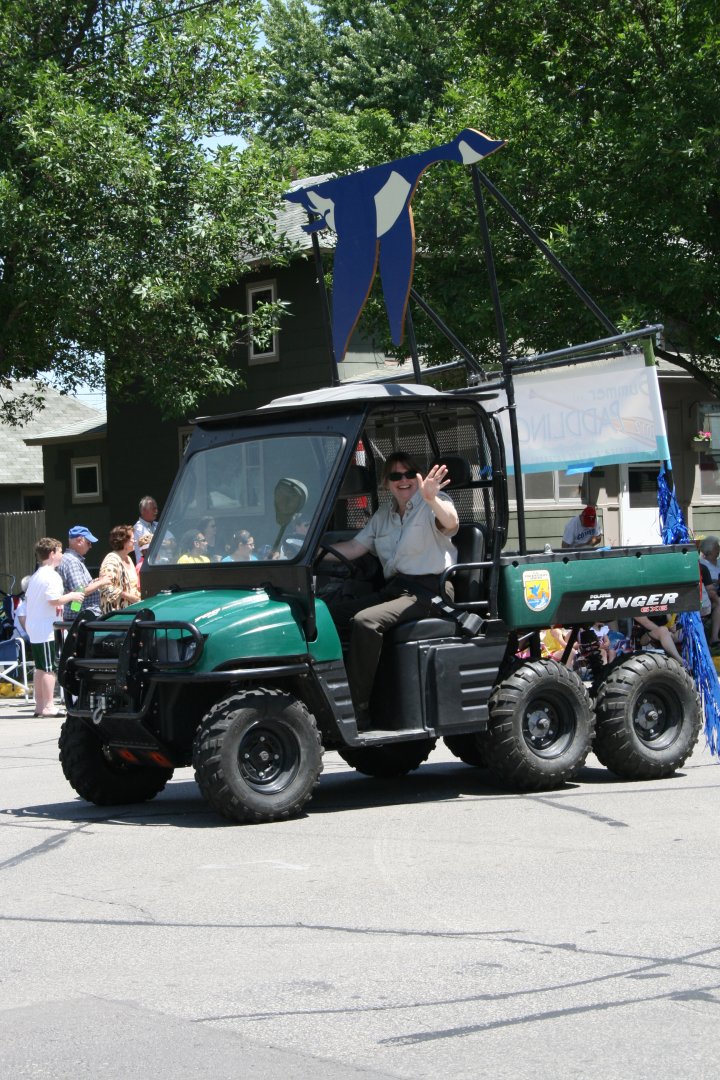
Lisa hoping the battery doesn't die

Wildlife Biologist Lisa Reid waves to the crowd from her blue goose adorned UTV during the Steamboat Days Parade.